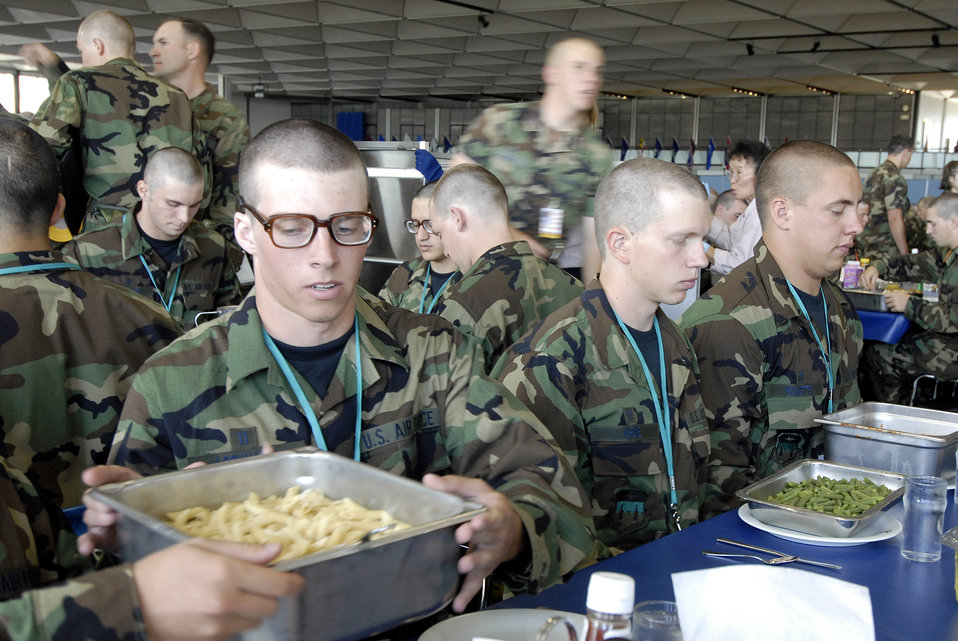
Eyes on the eagle

Basic cadet trainees prepare for their first lunch since arriving as the Class of 2011 June 29 at the U.S. Air Force Academy in Colorado. The cadets are in their first week of training and must not take their eyes off the eagle on their plate as they eat. They are in the first half of basic cadet training, commonly known as